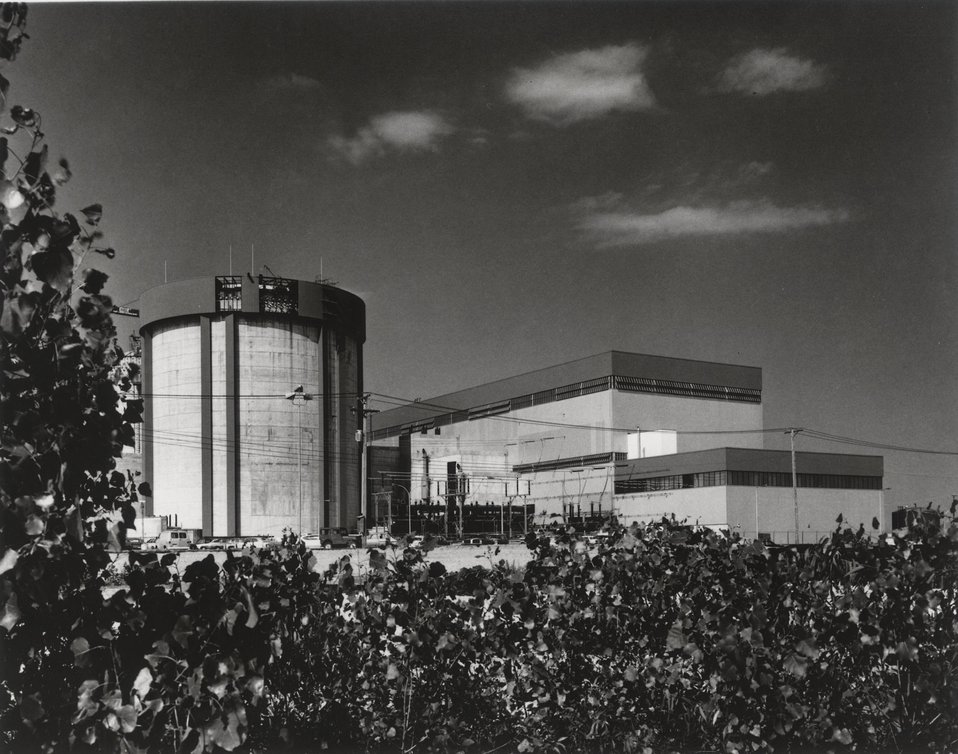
Commonwealth Edison Company's Zion Station near Zion, Illinois. Circa 1967.